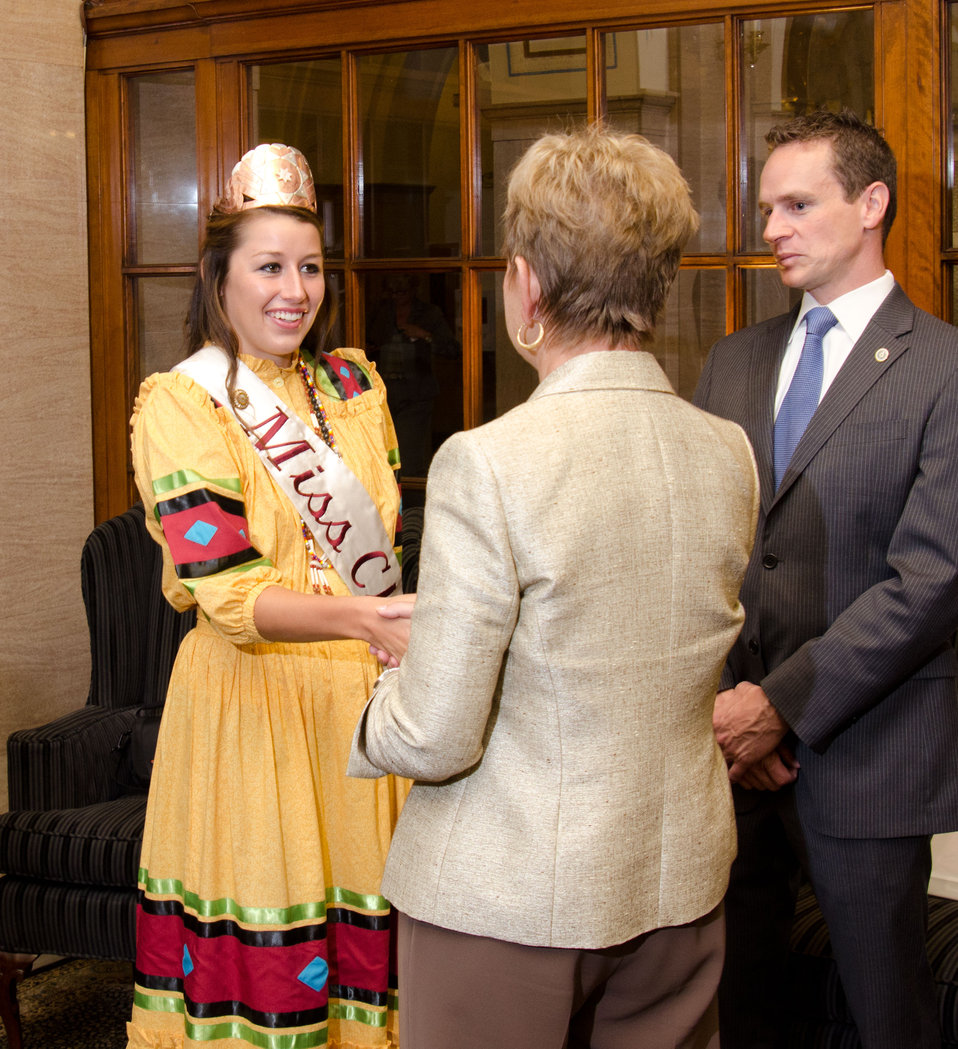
Miss Cherokee 2010-2011 Brooke Hudson and officers of the Cherokee nation met with U.S. Department of Agriculture staff members in Washington, DC, on Tuesday, August 9, 2011 USDA Photo by Lance Cheung.